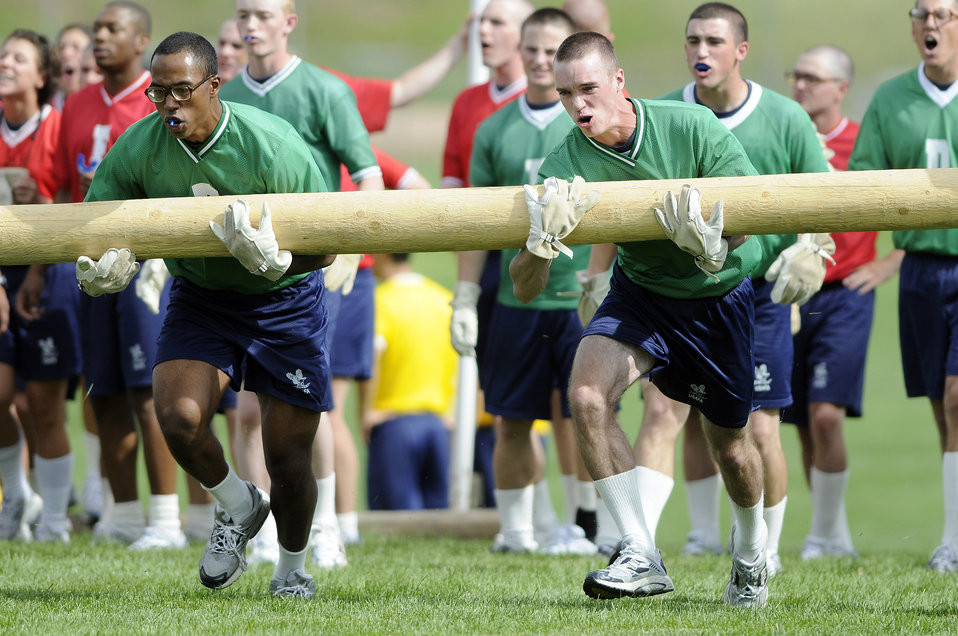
Class of 2013 Field Day

Basic cadet trainees with the U.S. Air Force Academy's Class of 2013 participate in the log relays during Field Day activities here today. About 1,344 trainees competed in various athletic events during Field Day, including tug
of war, log relays, steeple chase and sprint relays. Basic cadet training started June 25 and continues through Aug. 1. The new cadets are in their first month of training and are learning about Air Force heritage, honor, discipline and Air Force core values, in addition to improving physical
fitness. The fall academic semester begins Aug. 6.